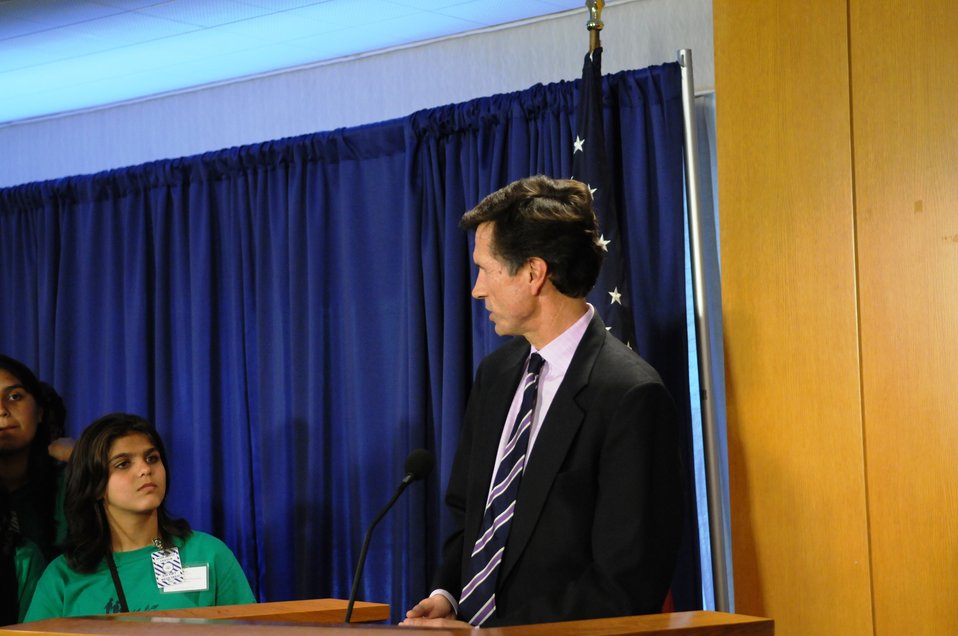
Assistant Secretary Blake Introduces a South Asian Seeds of Peace Participant

U.S. Assistant Secretary of State for South and Central Asian Affairs introduces a participant in the Seeds of Peace program after delivering the opening remarks at the U.S. Department of State in Washington, D.C., on July 14, 2010.